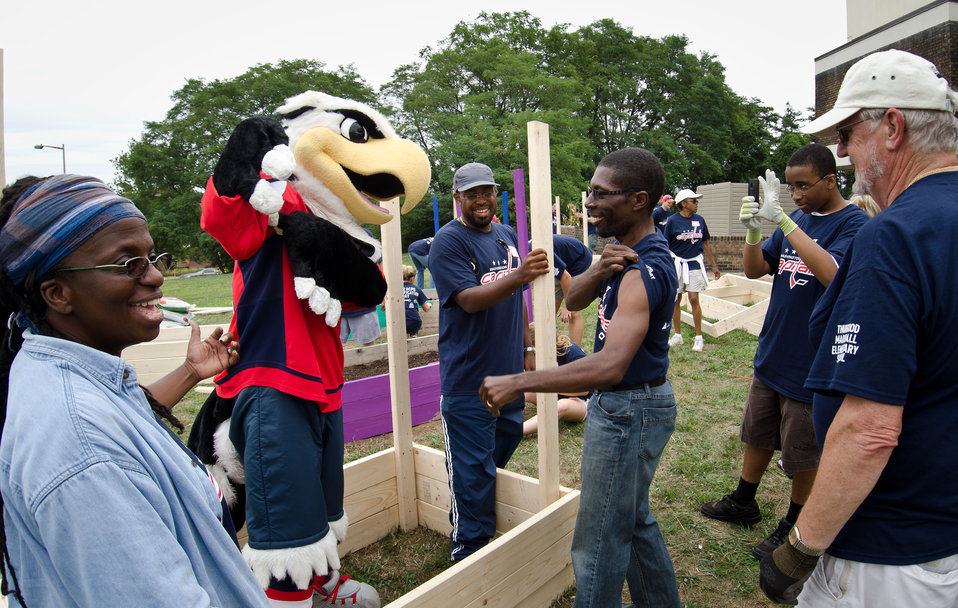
Principal Rembert Seaward and Washington Capitals' hockey mascot Slapshot compare arms-to-wings to see who has more muscles, when U.S. Department of Agriculture (USDA) People’s Garden Executive Master Gardeners, friends, and family, along with Washington Capitals fans volunteer in District of Columbia Public Schools’ (DCPS) Beautification Day, on Saturday, August 25, 2012, at Thurgood Marshall Elementary School, in Washington, D.C. Each year people are invited to help “spruce up” public school facilities in preparation for the first day of school. More the 70 volunteers pitched in at this large school facility. The People’s Garden effort involves building and painting raised planter boxes, then preparing the soil mixture so they are “ready to grow.” Additionally, a team that includes descendants of U.S. Supreme Court Justice Thurgood Marshall assembles a prefabricated garden toolshed. The Justice’s son, John Marshall leads the team, which includes Brianna the Justice’s great-grand daughter in one of many multi-generational efforts at this school today. Washington Capitals Forward Mike Riberio, his family and mascot Slapshot participated in every project underway at Marshall School. From the outside gardens, to inside murals, and robotics worktable construction, the teams made their goals.